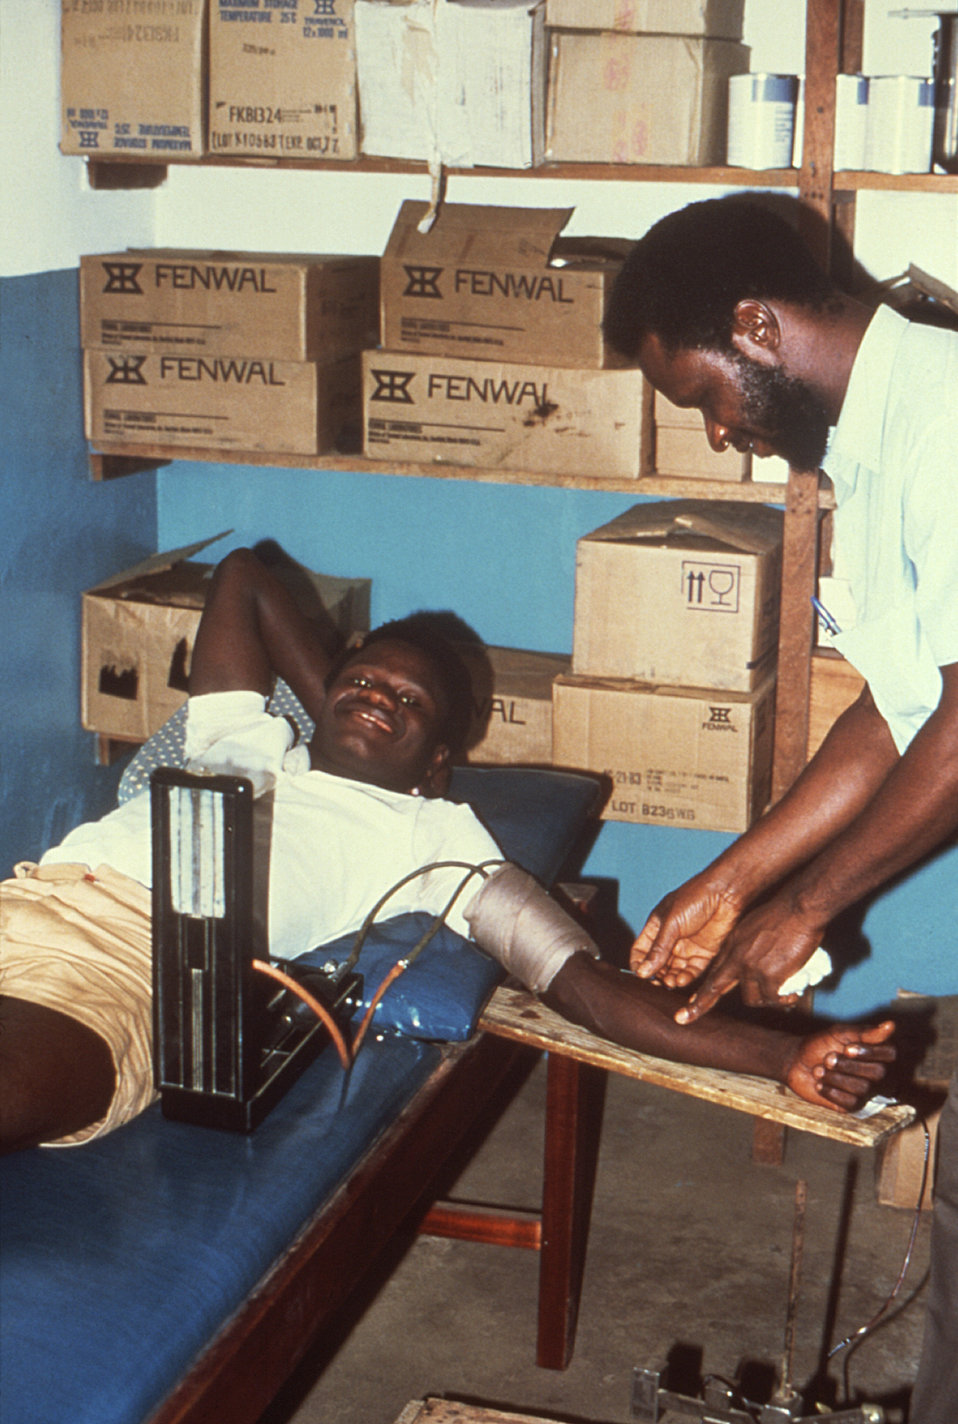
This was Harry Kowa as he 'bled' a patient in order to obtain much needed blood plasma in the Segbwema, Sierra Leone clinic.